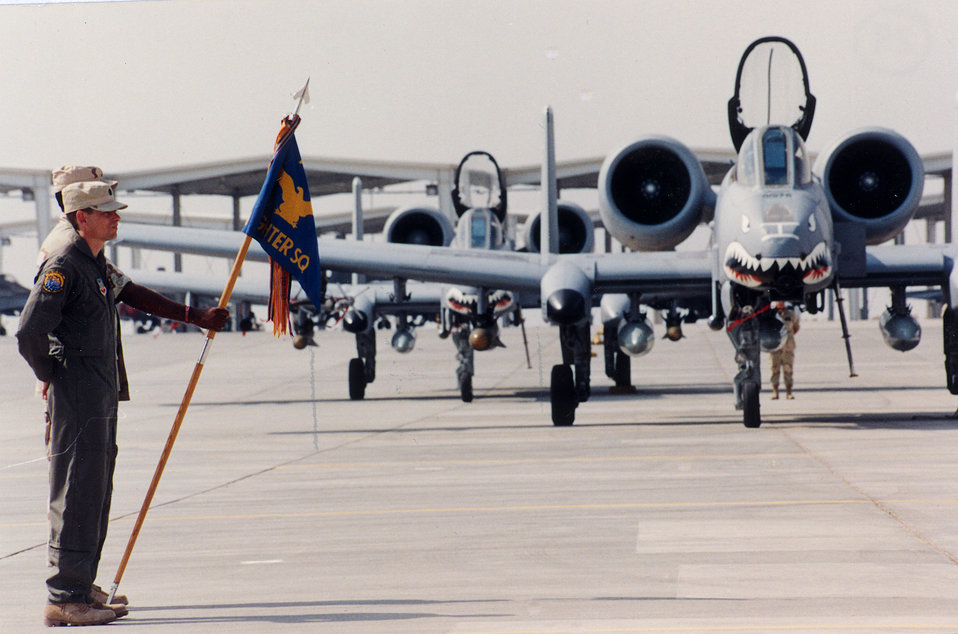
ceremony welcoming the 75th to Al Jabar AB, Kuwait

1990's -- Lt. Col. Geoff Jumper, ADVON commander, and MSgt. T.J. Johnson, 75th Fighter Squadron first sergeant, stand at parade rest, in front of some A-10s, during ceremonies welcoming the 75th to Al Jabar AB, Kuwait.